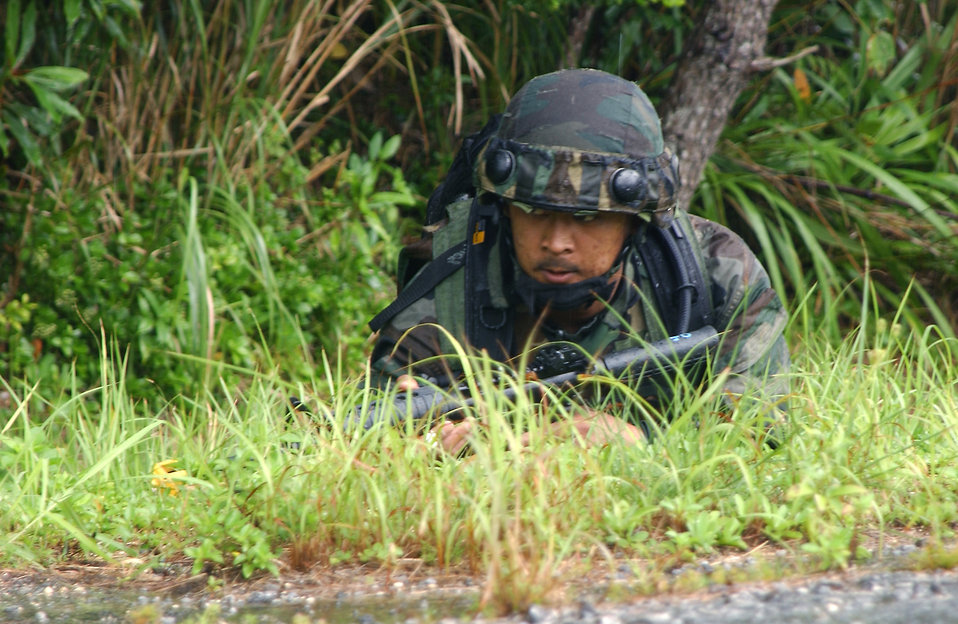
Take cover

KADENA AIR BASE, Japan -- Staff Sgt. Orlando Galvez takes cover during a simulated convoy scenario here Aug. 26. The scenario was part of the 18th Wing's operational readiness exercise. Sergeant Galvez is assigned to the 18th Security Forces Squadron.